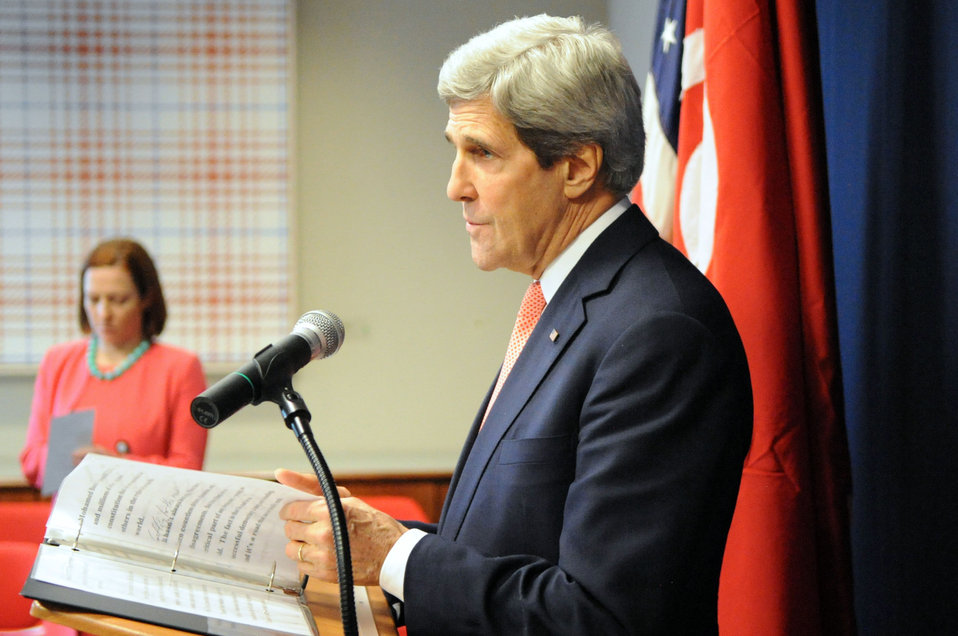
Secretary Kerry, Spokesperson Psaki Conduct News Conference in Tunisia

U.S. Secretary of State John Kerry, which State Department Spokesperson Jen Psaki in the background, conducts a news conference at the U.S. Embassy in Tunis, Tunisia, after meetings with government officials on February 18, 2014.